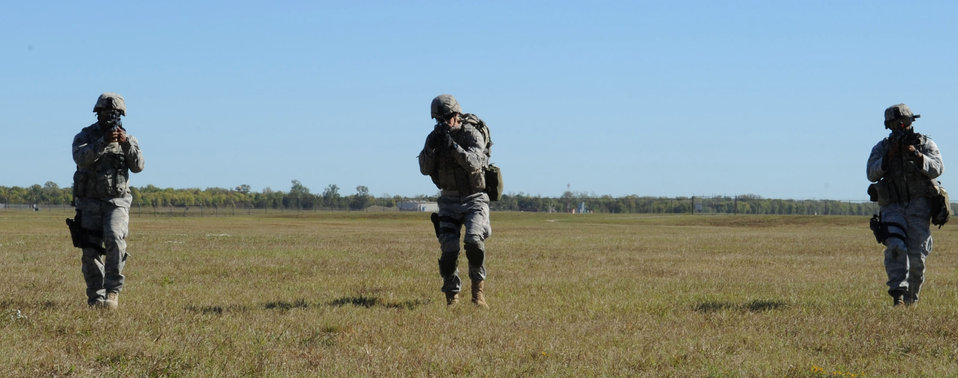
Barksdale Airmen prepare for Global Strike Challenge

Airmen from the 2nd Security Forces Squadron advance on a target during a training exercise Nov. 4, 2010, at Barksdale Air Force Base, La. in preparation for the Global Strike Challenge competition.